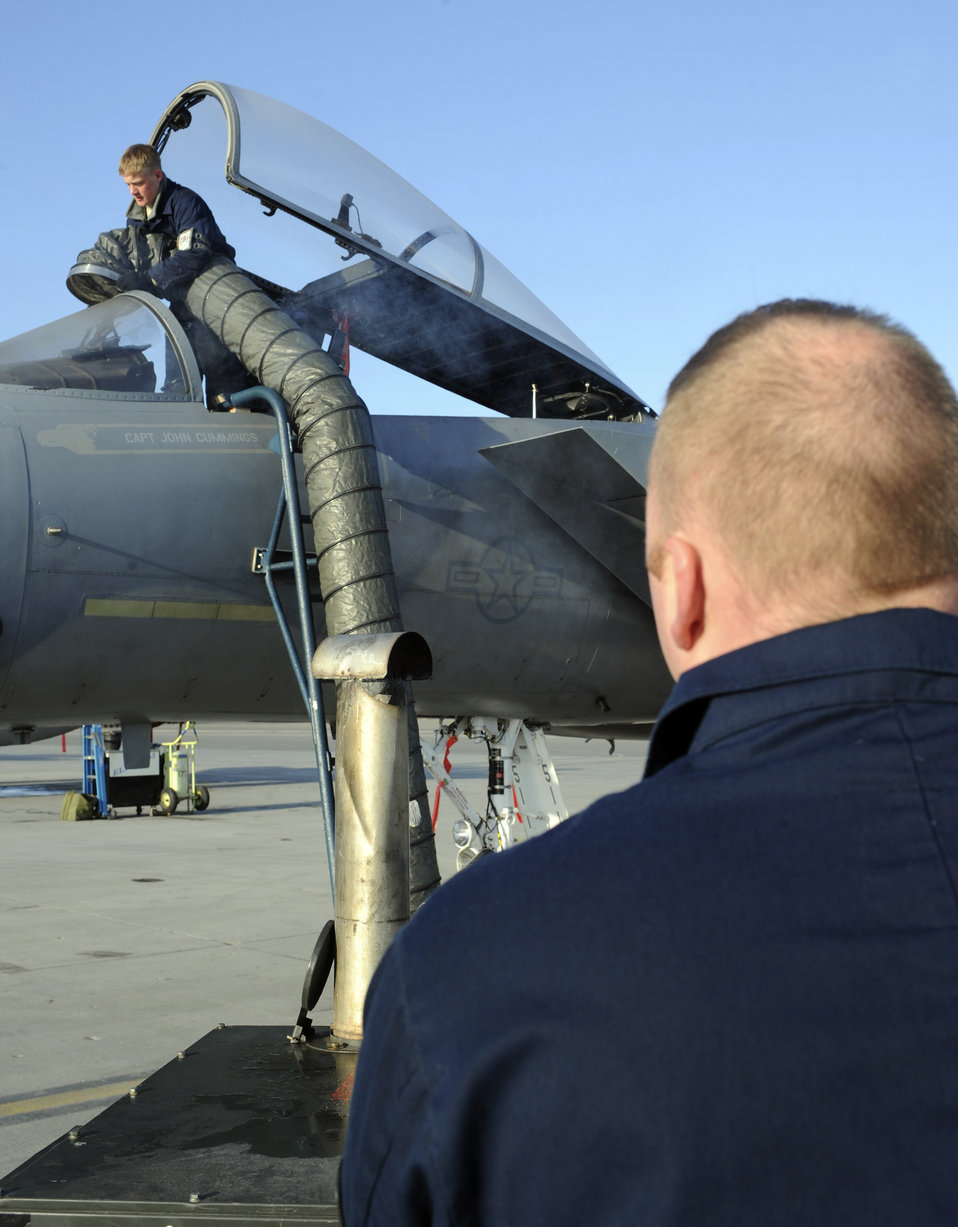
Maintainers keep Red Flag-Alaska jets flying

Airman 1st Class Louis Hall (in cockpit) and Staff Sgt Robert Jackson, both from the 19th Aircraft Maintenance Unit at Tyndall Air Force Base, Fla., warm the cockpit of an F-15 Eagle, preparing it for takeoff during Red Flag-Alaska April 28 at Elmendorf AFB, Alaska. This exercise enables flying squadrons to enhance their warfighting capabilities by flying simulated combat sorties in a realistic threat environment.